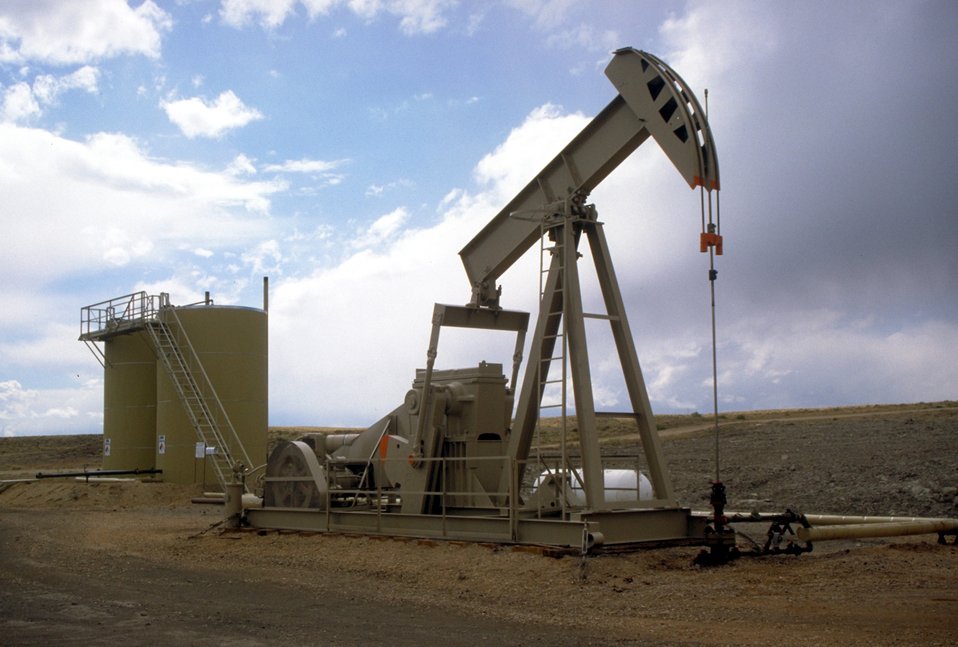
Pump unit producing coal bed methane near Price, Utah.